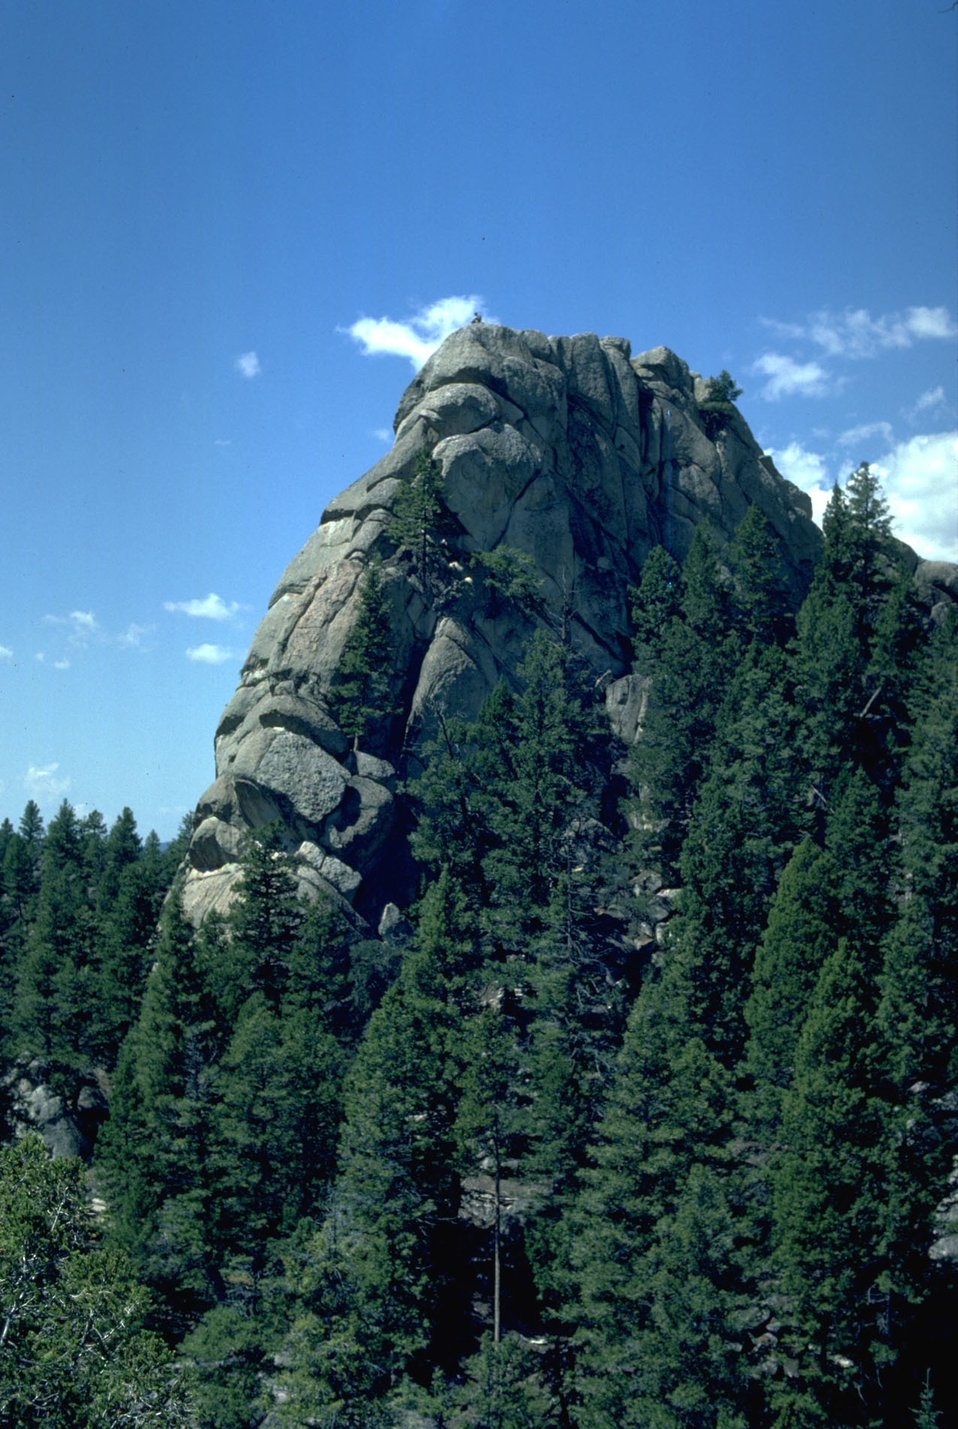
Humbug Spires